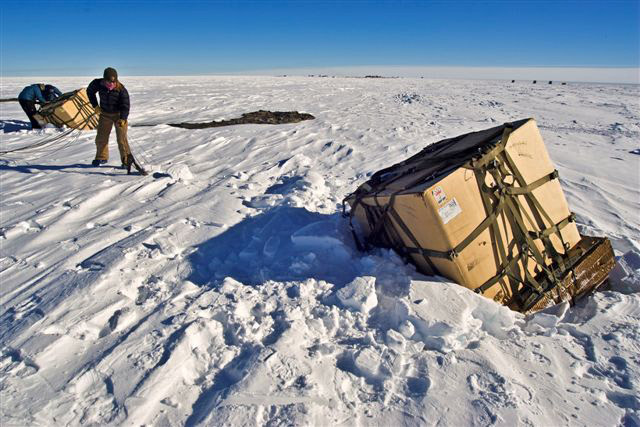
Joint effort key to success in Deep Freeze

Containerized delivery system bundles are recovered by a ground crew member at the South Pole. The bundles were airdropped by a McChord Air Force Base, Wash., C-17 Globemaster III supporting Operation Deep Freeze. The 13th Air Force-led Operation Deep Freeze is a unique joint and total force mission that has supported the National Science Foundation and U.S. Antarctic Program since 1955. By validating the C-17's capability to complete airdrop missions at the geographical South Pole, Joint Task Force-Support Forces Antarctica demonstrated its ability to provide mid-winter emergency re-supply and flexible support to the National Science Foundation and U.S. Antarctica Program.